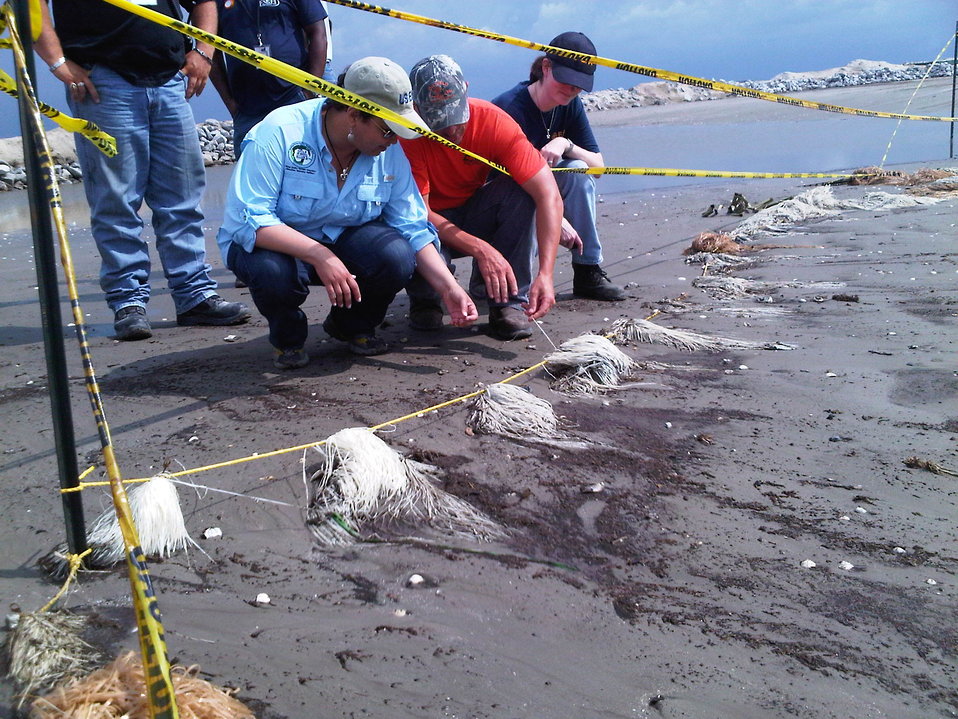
June 2, Administrator Jackson Tours the Beaches of Port Fourchon, LA

EPA Administrator Lisa Jackson takes a look at all the variety of methods being tried to catch and absorb oil.